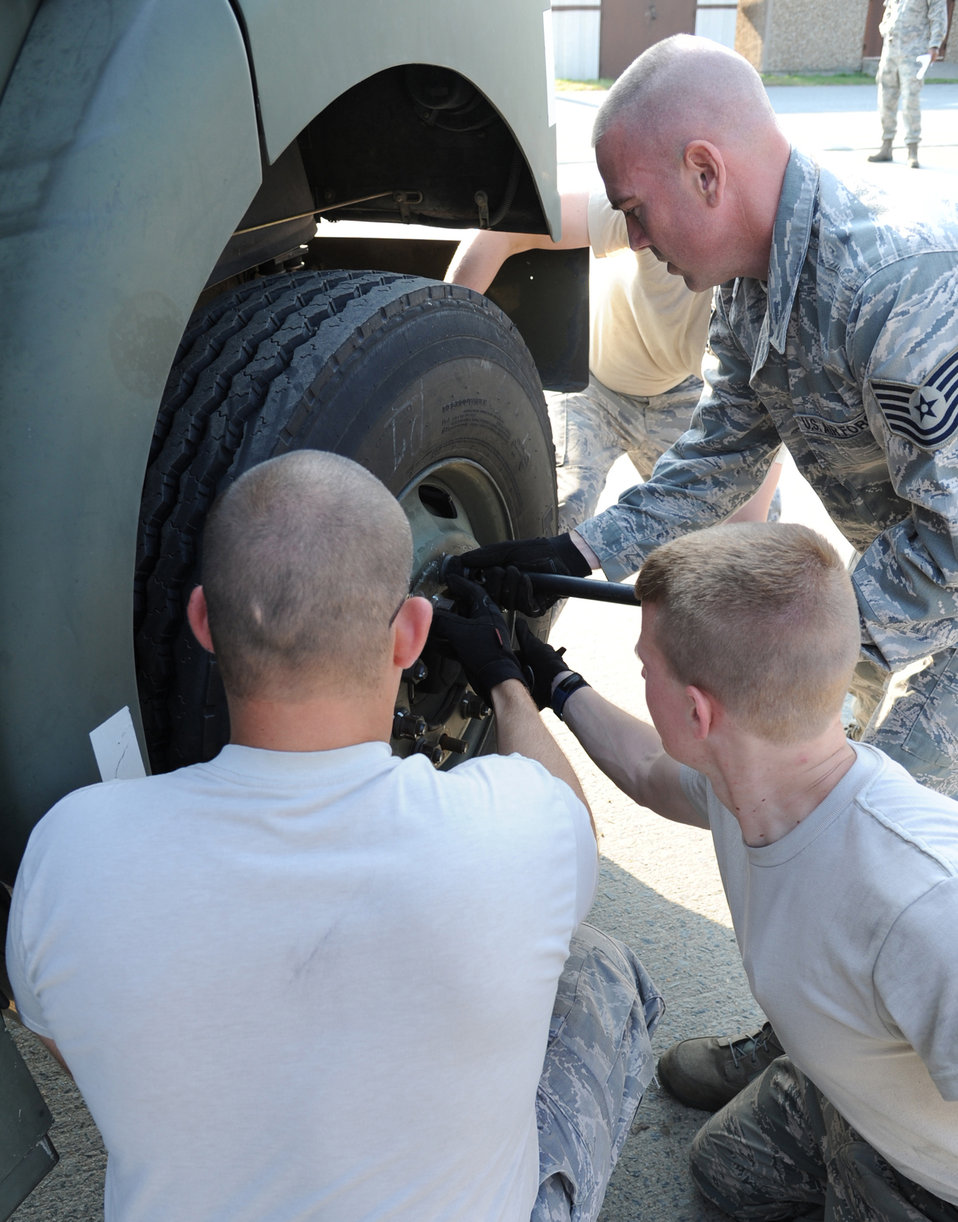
Weapons load competition

Fuels technicians from the 4th Logistics Readiness Squadron remove lug nuts from a refueling truck tire May 25, 2011, during a tire change challenge at Seymour Johnson Air Force Base, N.C.